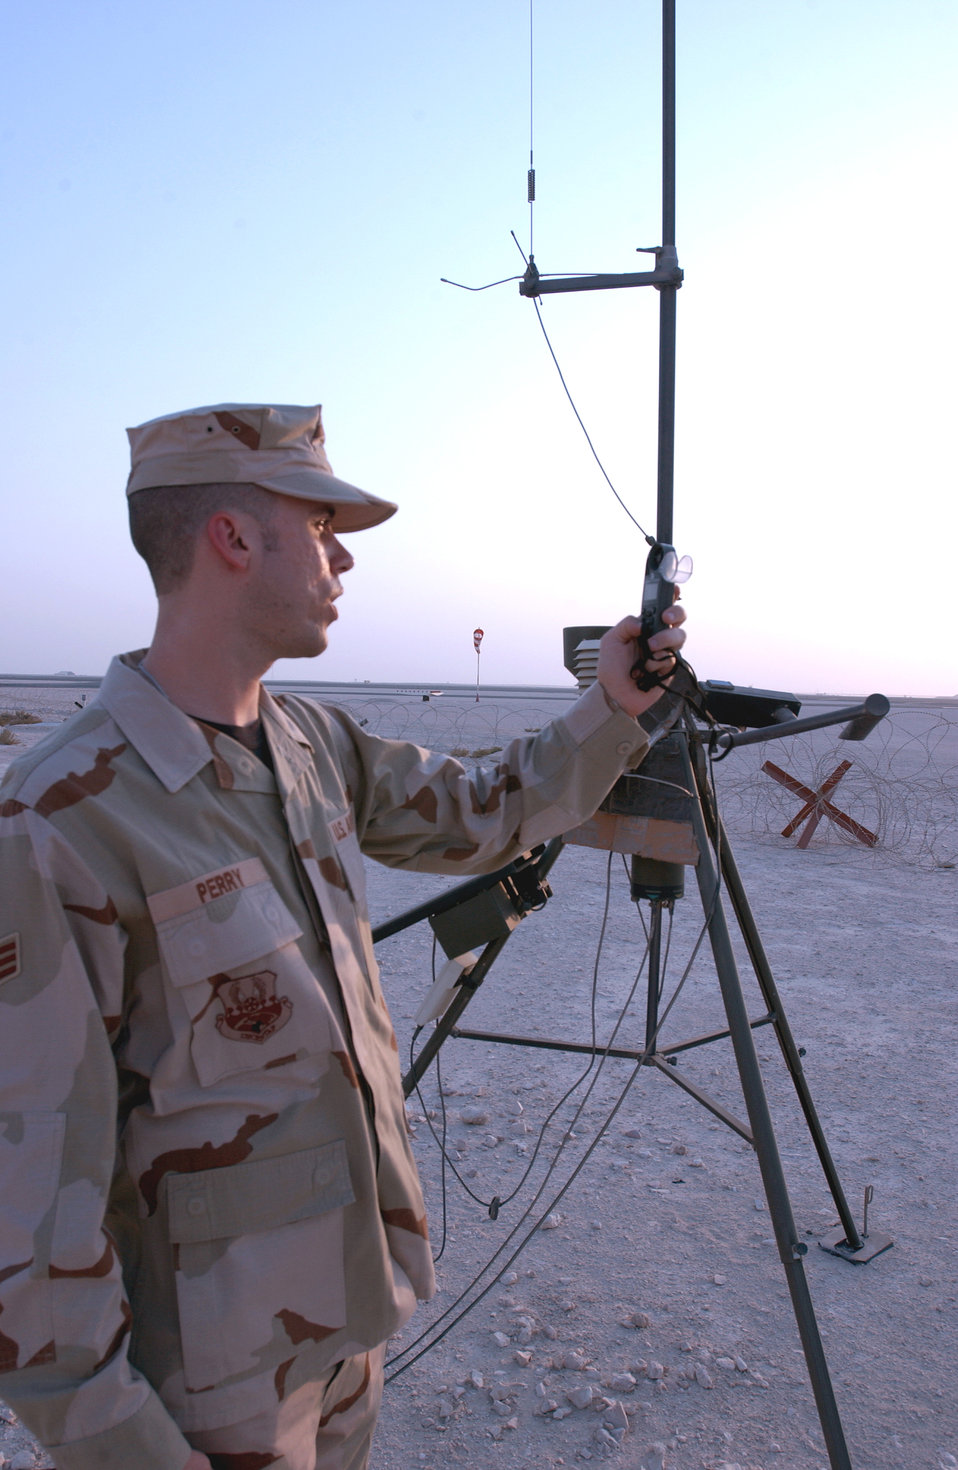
Desert wind

Senior Airman Daniel Perry takes a wind reading at a forward operating base in Southwest Asia Aug. 25. Airman Perry is a weather forecaster assigned to the 379th Expeditionary Operations Support Squadron and is deployed from Robins Air Force Base, Ga.